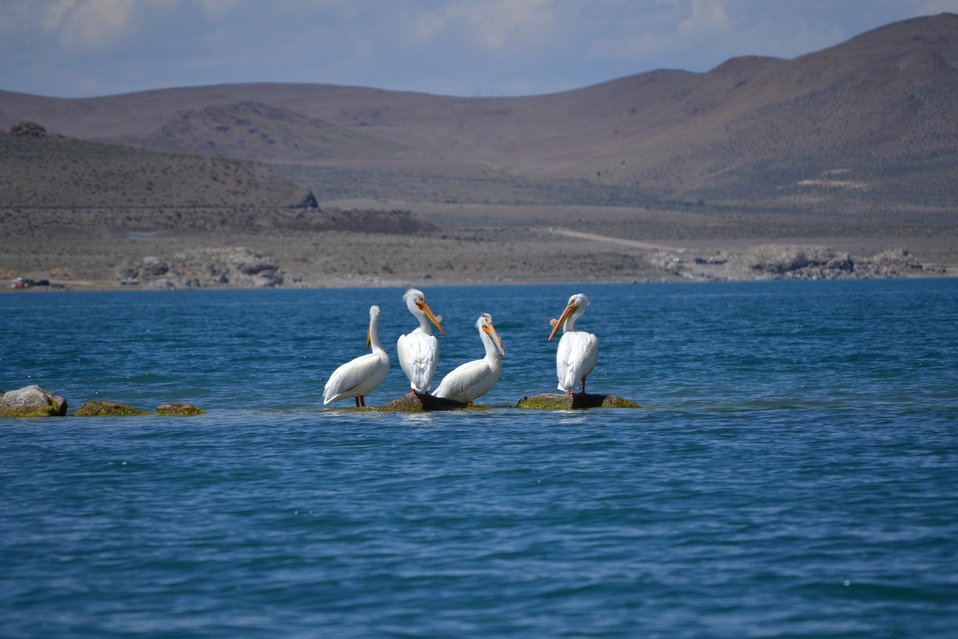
American white pelicans at Anaho Island NWR

These fish-eating birds rely on the spring spawning runs of Pyramid Lake fish as well as the numerous shallow lakes and wetlands within 70 miles of the island for food.